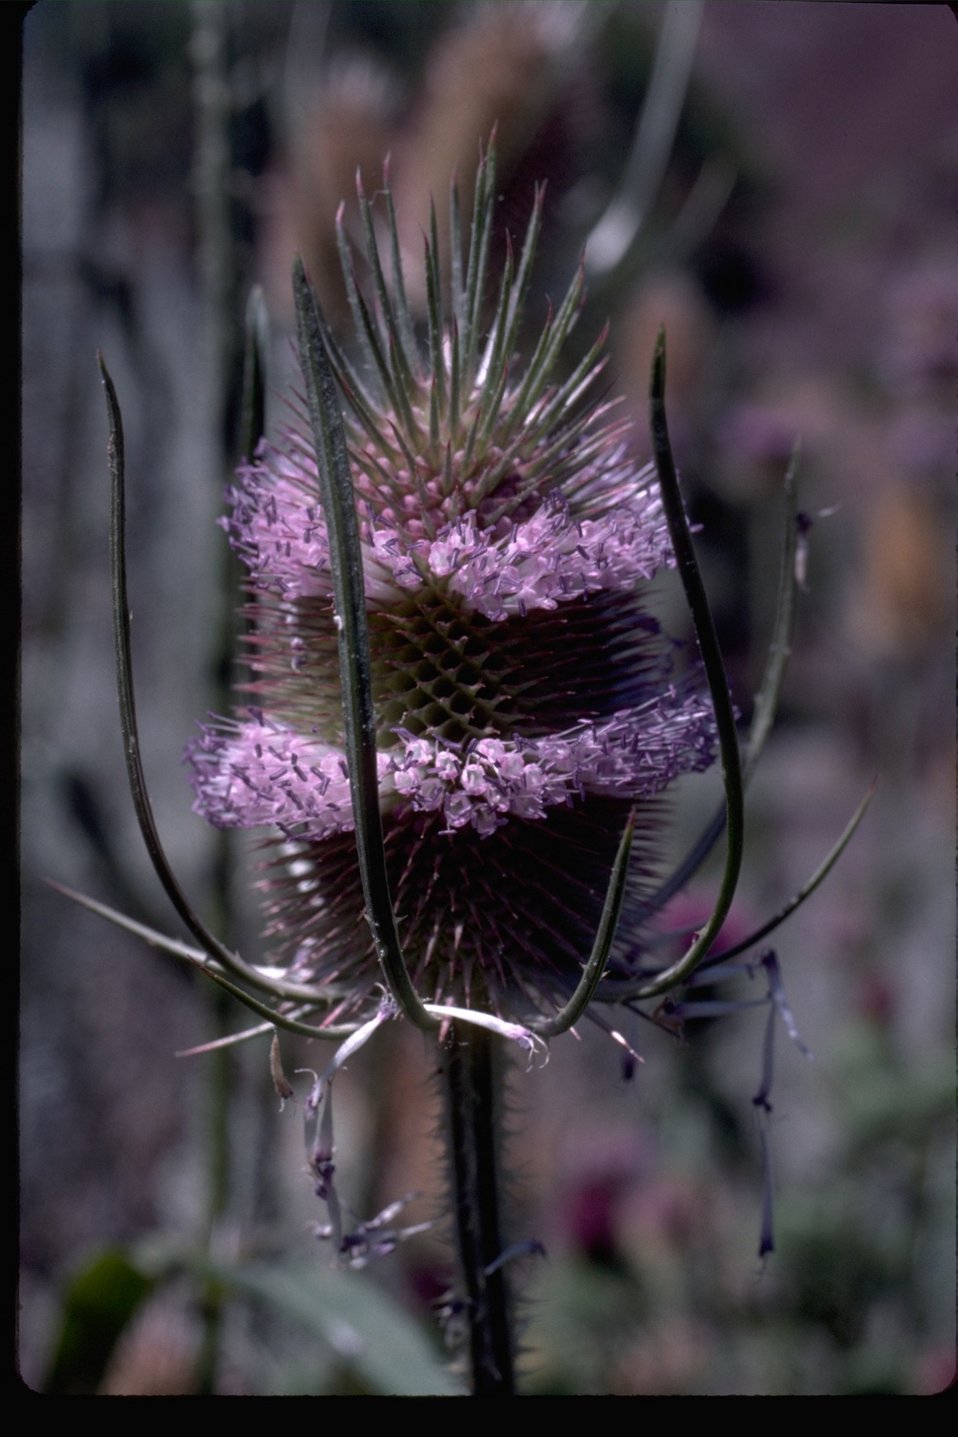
Dipsacus Sylvestris